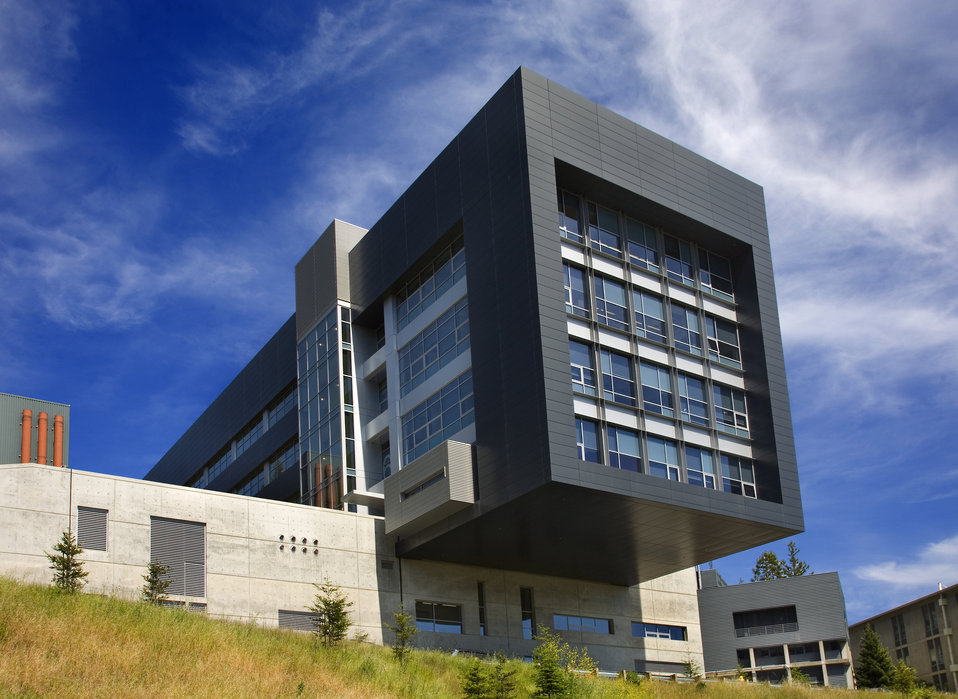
THE MOLECULAR FOUNDRY AT LAWRENCE BERKELEY NATIONAL LABORATORY IN BERKELEY, CALIFORNIA.

THE MOLECULAR FOUNDRY IS A DOE USER FACILITY CHARGED WITH PROVIDING SUPPORT TO NANOSCIENCE RESEARCHERS IN ACADEMIC, GOVERNMENT AND INDUSTRIAL LABORATORIES AROUND THE WORLD. THE FOUNDRY PROVIDES USERS WITH INSTRUMENTS, TECHNIQUES AND COLLABORATORS TO ENHANCE THEIR STUDIES OF SYNTHESIS, CHARACTERIZATION AND THEORY OF NANOSCALE MATERIALS. IT'S SIX FACILITIES FOCUS ON BOTH 'SOFT' (BIOLOGICAL AND POLYMERIC) AND 'HARD' (INORGANIC AND MICROFABRICATED) NANOSTRUCTURES BUILDING BLOCKS, AND THEIR INTEGRATION INTO COMPLEX FUNCTIONAL ASSEMBLIES.